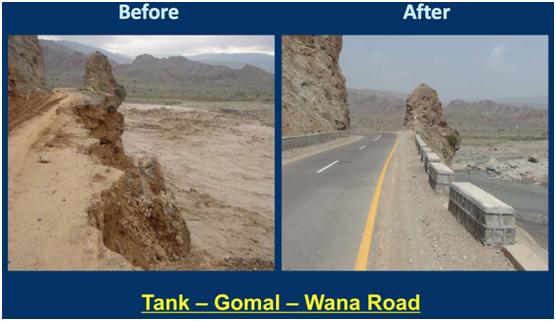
Tank- Gomal- Wana Road.

Before and After of Tank- Gomal- Wana Road.